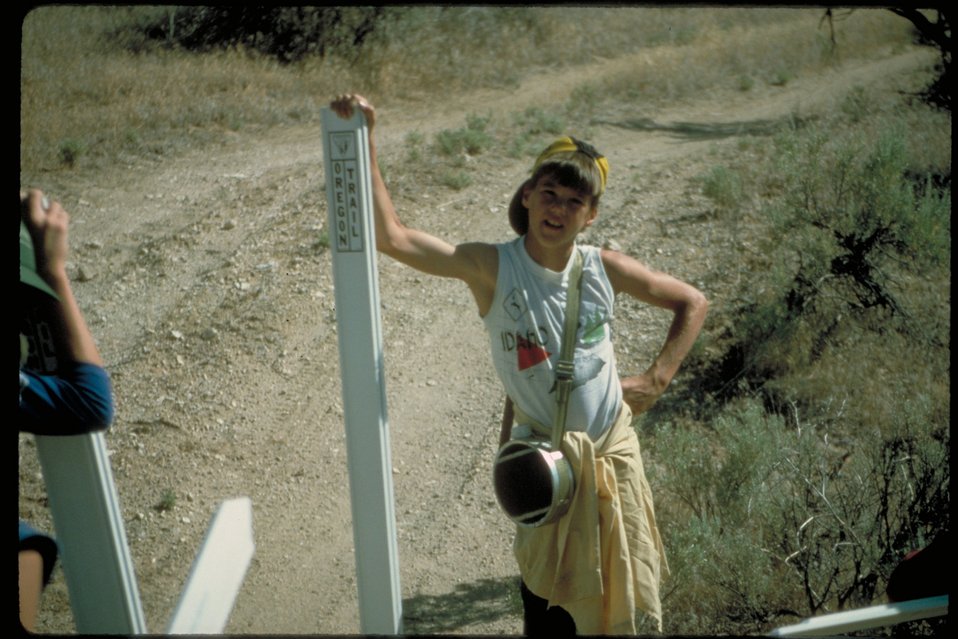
Boyscout on Oregon Trail Marking Cassia to Deer Gulches Cultural resource Historic area LSRD Lower Snake River District